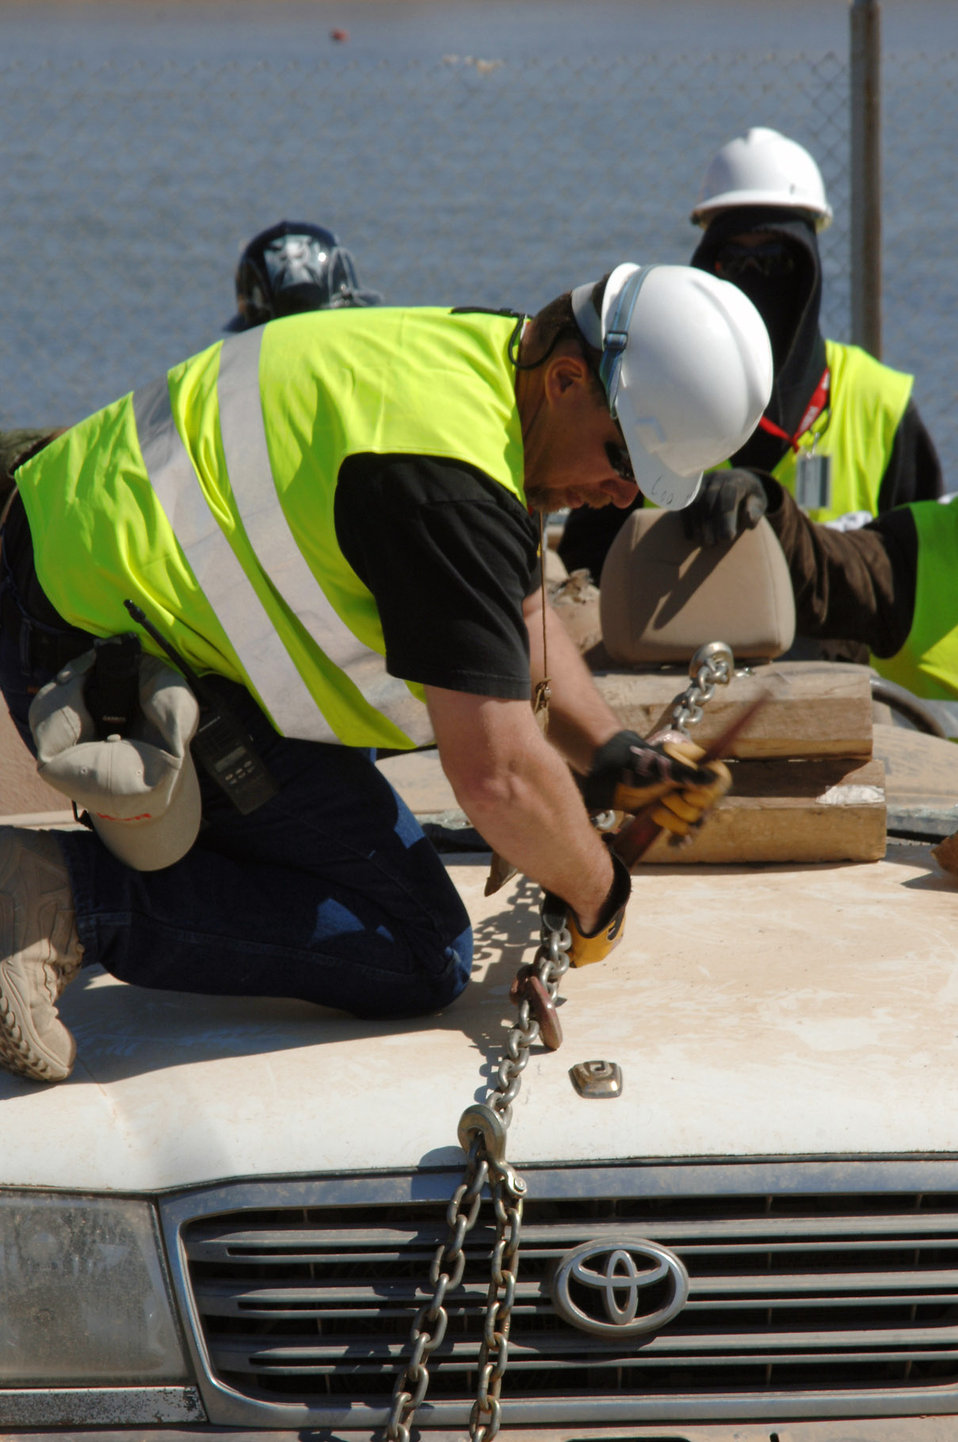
Balad Airmen teach contractors lifesaving skills

Scott Hesse attaches a chain to a test vehicle during a refresher training session on using hydraulic tools March 5 at Balad Air Base, Iraq. The class was led by 332nd Expeditionary Civil Engineer Squadron Fire Department Airmen. The class, a first for the Balad AB fire department, marked an important step for the U.S. government contractors to train jointly with Airmen. Mr. Hesse is a a KBR Theater Transportation Mission Recovery senior mechanic. The TTM Recovery personnel are responsible for retrieving stuck, broken down and destroyed military vehicles throughout Iraq.